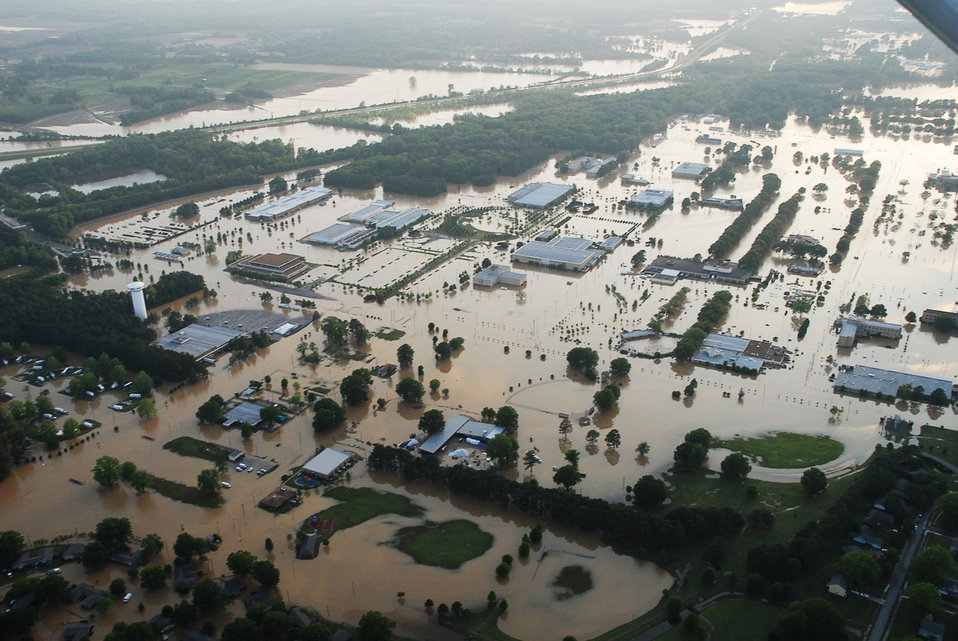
Rescue center members assist with saving 330 lives in Tennessee

A levee breach of a nearby river flooded much of Naval Support Activity-South May 1, 2010, in Millington, Tenn. Search and rescue operations saved approximately 330 Navy personnel and their family members. Coast Guard, Navy, Civil Air Patrol, local authorities and the Air Force Rescue Coordination Center all participated in rescue operations.